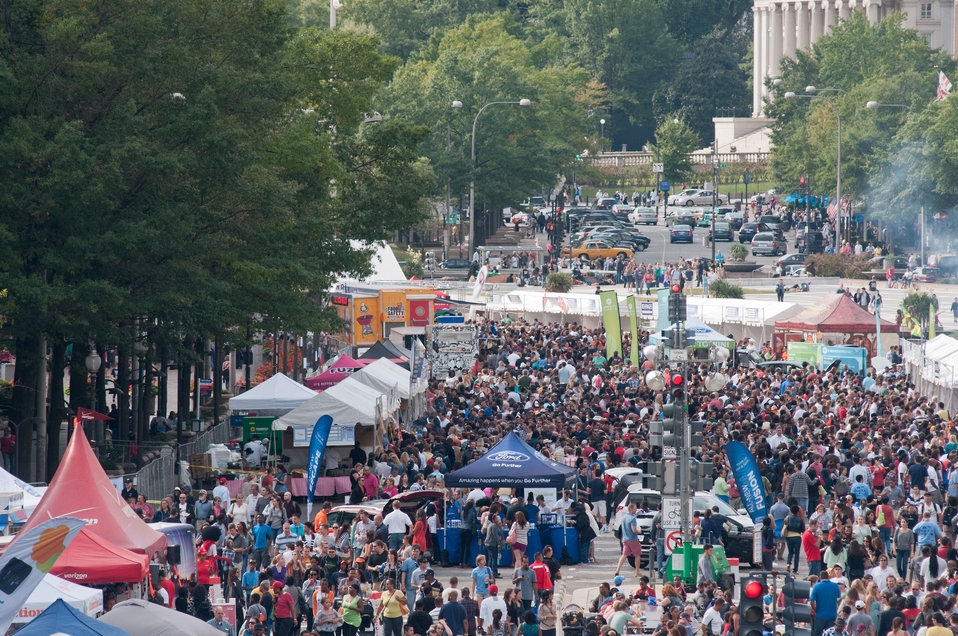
The Taste of D.C., event highlights more than 70 eateries, 30 specialty beer providers, the United Service Organization (USO) Metropolitan Washington, and live bands. It is anticipated that more than 500,000 people will attend over the course of the three-day event, which extends from the White House to the Capitol, along Pennsylvania Ave. in Washington D.C. on Saturday, October 6, 2012. Agriculture Food Safety and Inspection Service specialists present talks and cooking demonstrations. Agriculture’s mobile Discovery Zone is on hand to educate children and parents about the four main principals of food safety – clean, separate, cook and chill.